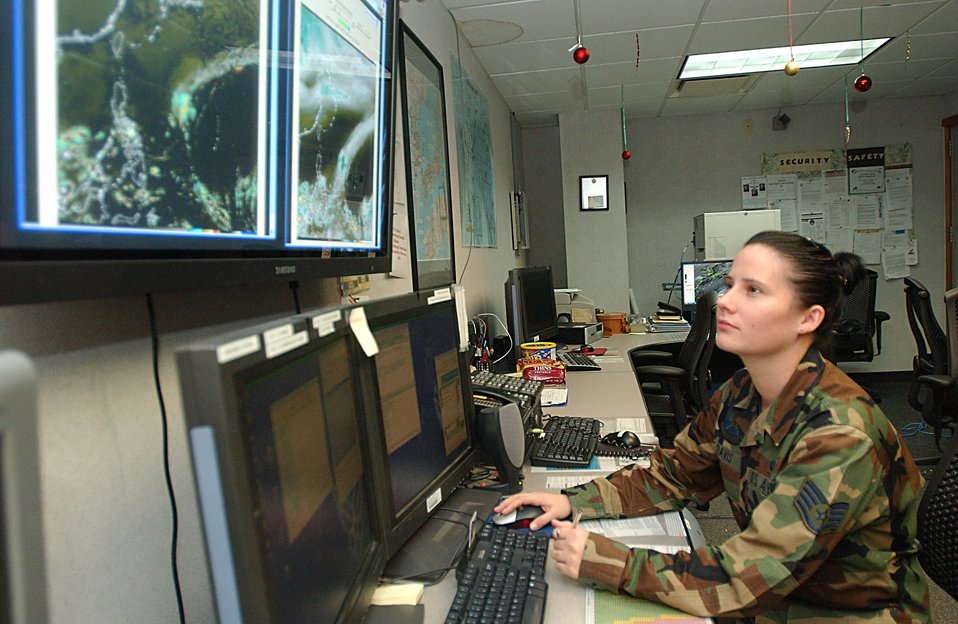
Serving through the season: Staff Sgt. Kyna Davis

Staff Sgt. Kyna Davis, 18th Operations Support Squadron meteorologist, reviews the weather radar at Kadena Air Base, Japan. Sergeant Davis is one of many Airmen on duty this holiday season.